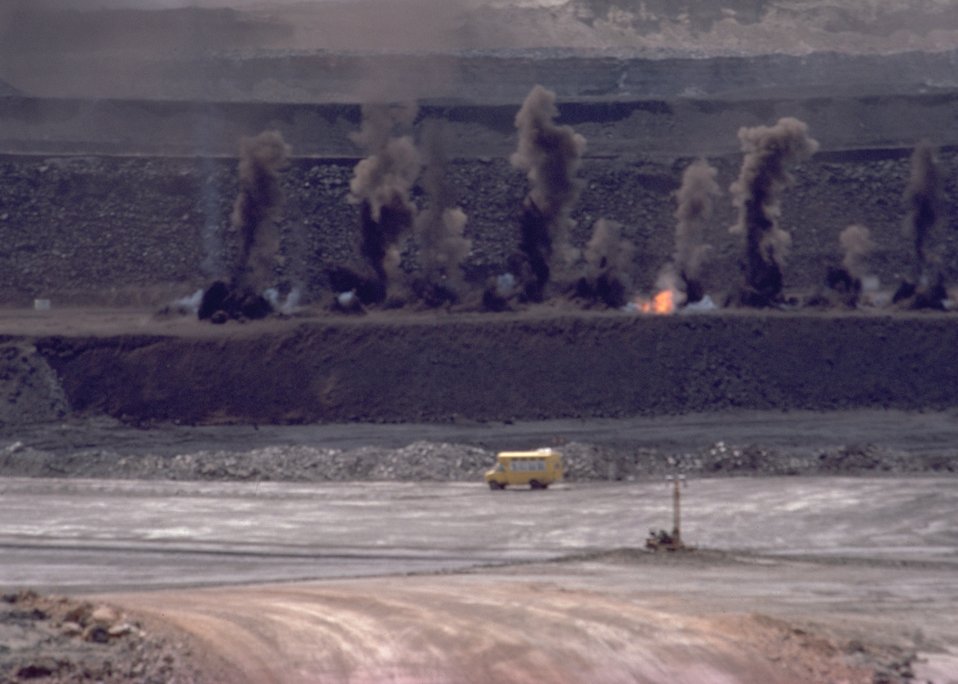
Coal bed methane development.